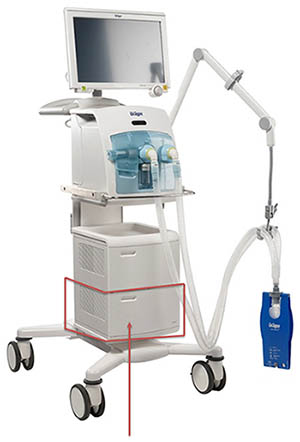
RECALLED – PS500 Power Supply Unit Ventilators

April 2, 2014 – Product Recall – Dräger Issues Voluntary Nationwide Recall of Optional PS500 Power Supply for Evita V500 and Babylog VN500 Ventilators.